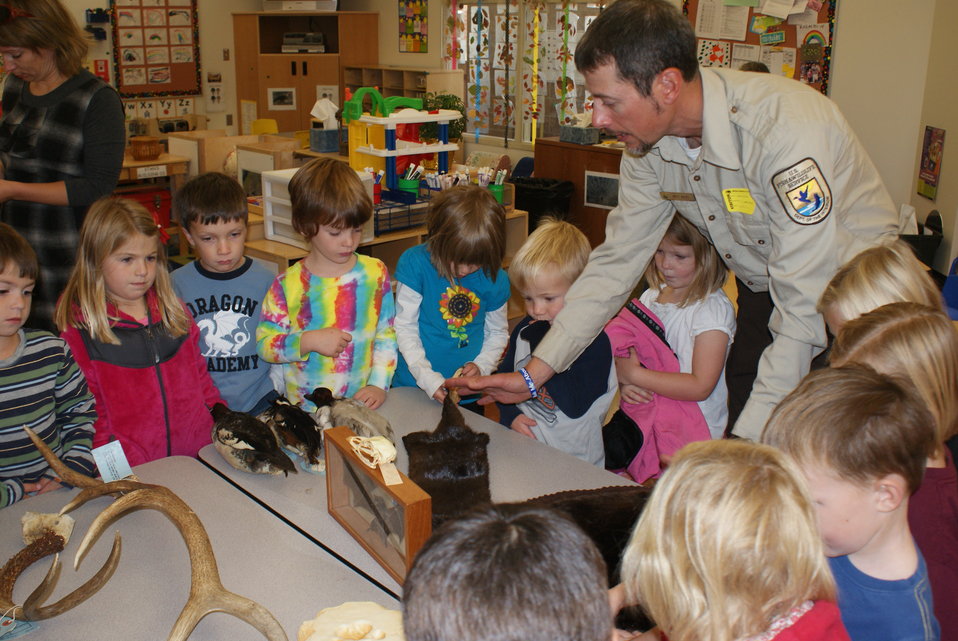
Scientists in the Community Program

U.S. Fish and Wildlife Service Mountain-Prairie Region Deputy ARD for External Affairs, Matt Kales, introduces early childhood education students at William Roberts Elementary School in Denver to some of Colorado's native and historic wildlife species.